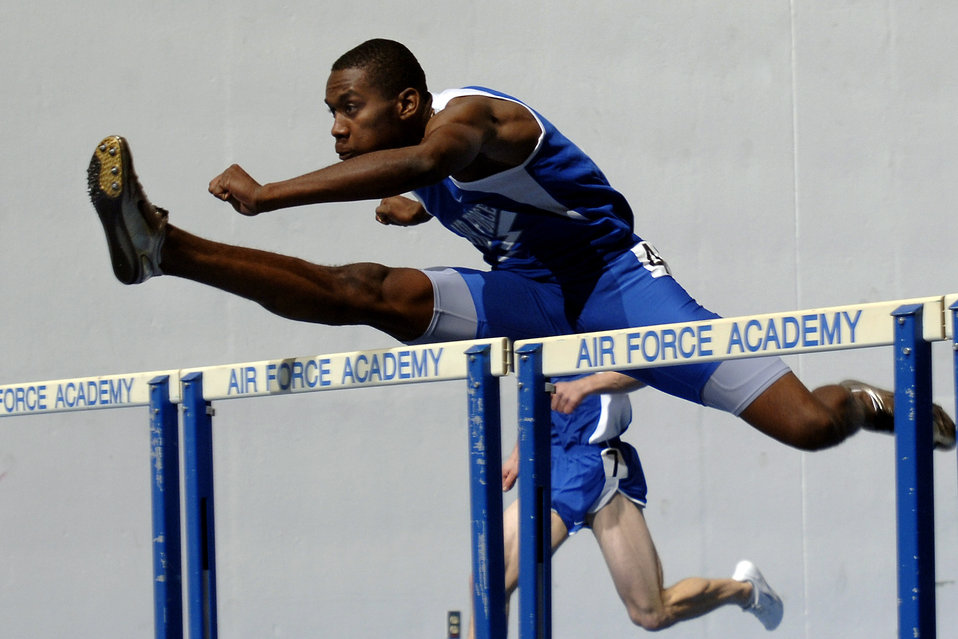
Over the hurdle

U.S. Air Force Academy Falcon freshman Terry Robinson placed third in the 60-meter men's hurdle competition with a time of 8.38 seconds at the Air Force All-Comers Meet Jan. 13 at Colorado Springs, Colo.